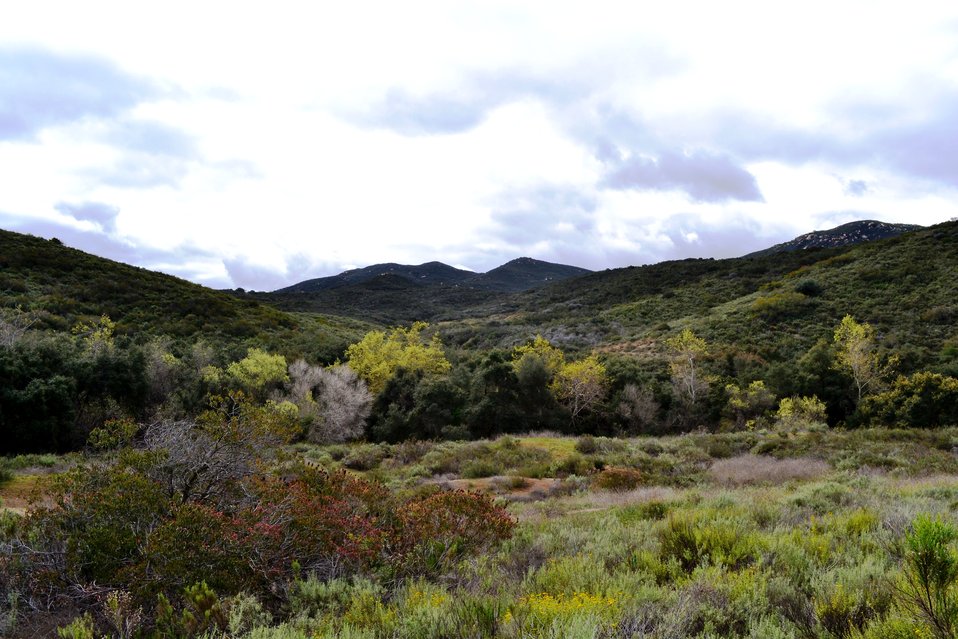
Coastal sage scrub and riparian habitat on the San Diego Refuge